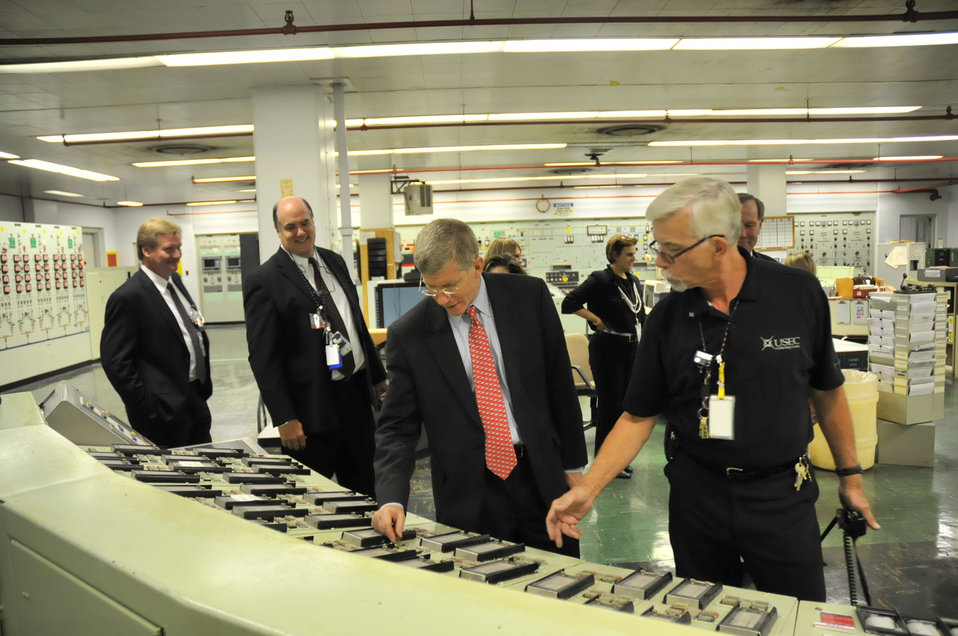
Deputy Secretary Daniel Poneman observes instrumentation in the X-333 Process Building Control Room during his visit to the Portsmouth Gaseous Diffusion Plant on September 9, 2010. To his right is Jack Snyder, X-333 Building Manager for USEC and at left are DOE’s Deputy Federal Project Director Jack Zimmerman and Portsmouth/Paducah Project Manager Bill Murphie.